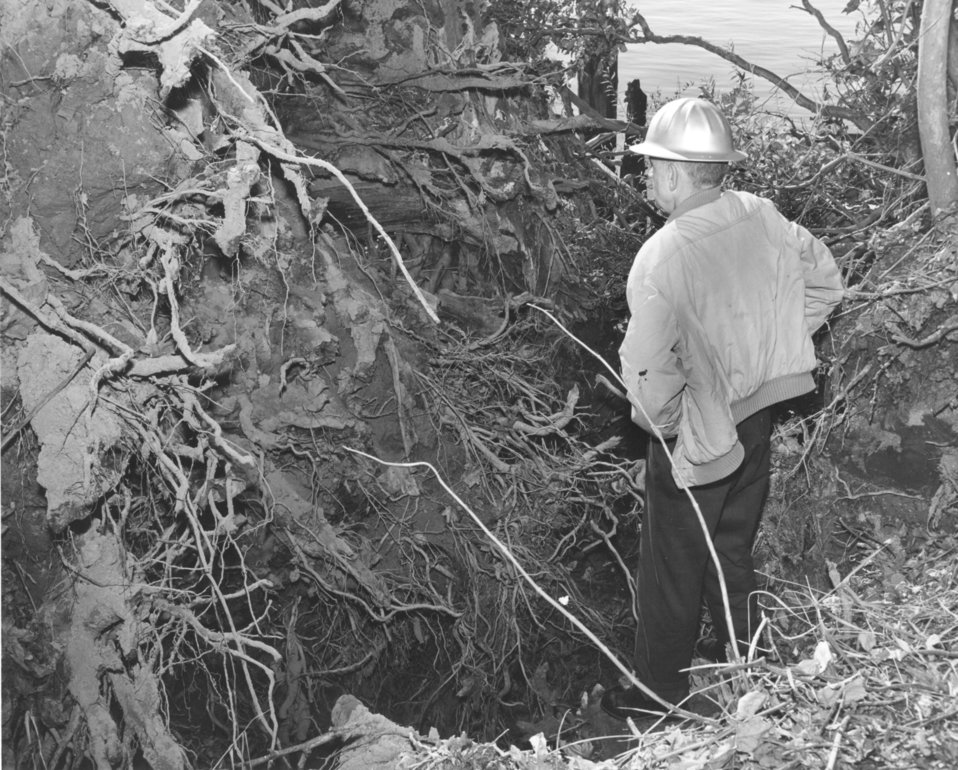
Toppled sycamore tree on Sacramento River levee

An historic photo of a toppled Sycamore tree on a Sacramento River levee near Clarksburg, Calif., shown in October 1962. An accompanying description reads: 'Closeup of root system that gave way during high flows. The hole left in the levee measures a good ten feet across and deep.'